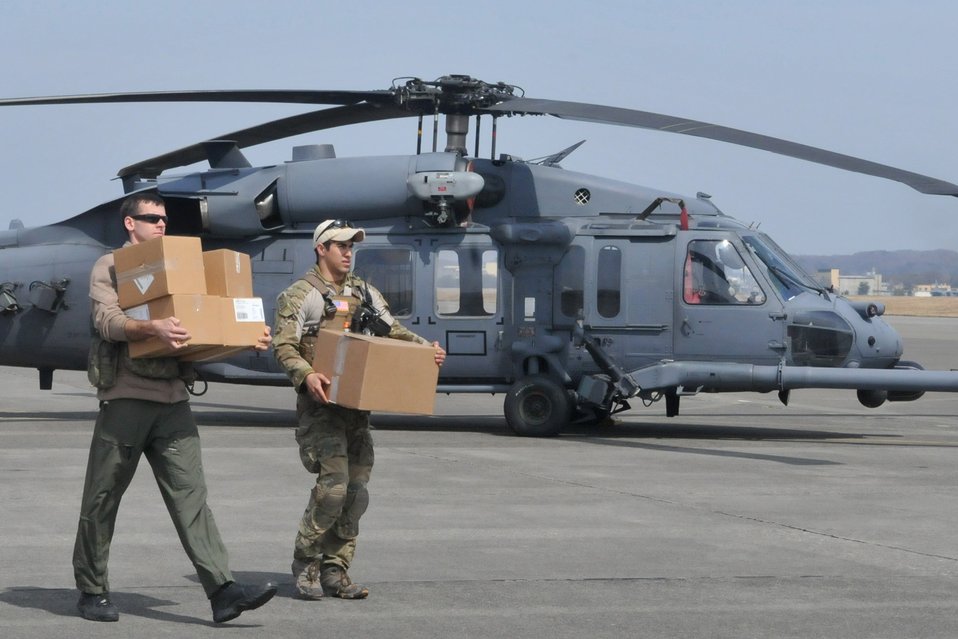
Supporting Operation Tomodachi

Two Airmen carry medical supplies to an HH-60 Pave Hawk prior to takeoff March 20, 2011, at Yokota Air Base, Japan.